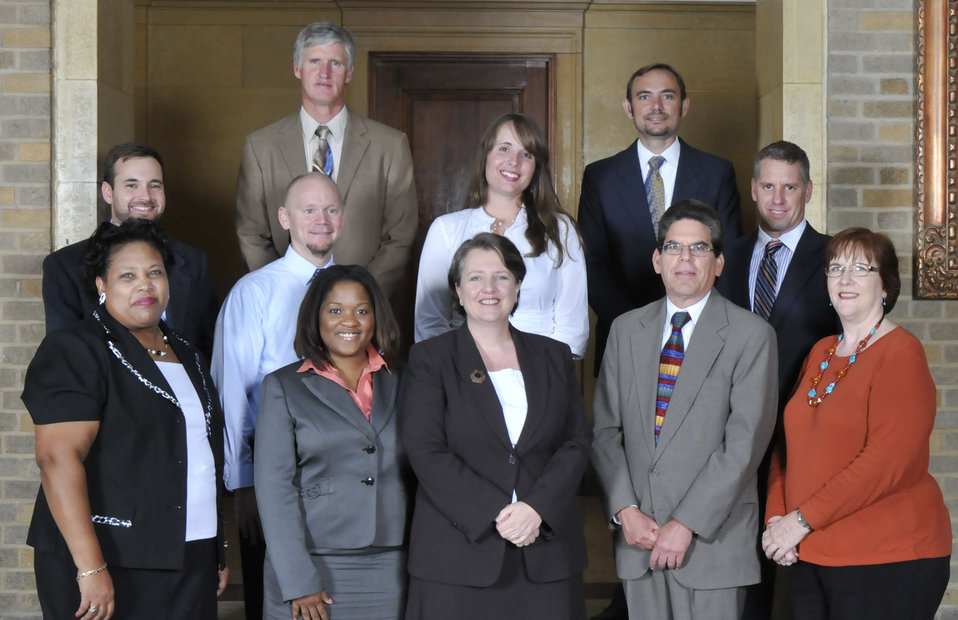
Professional Development Committee, Economic Research Service, Washington, DC. Patrice C. Lowstuter and Barry Krissoff, Group Leaders. For the development and implementation of a sustainable Professional Development program threat plants the seeds for a culture of communications, collaboration, and lifelong learning for all ERS employees.
On September 14, 2011 in the patio of the Whitten Building Patio of the US Department of Agriculture in Washington, DC.